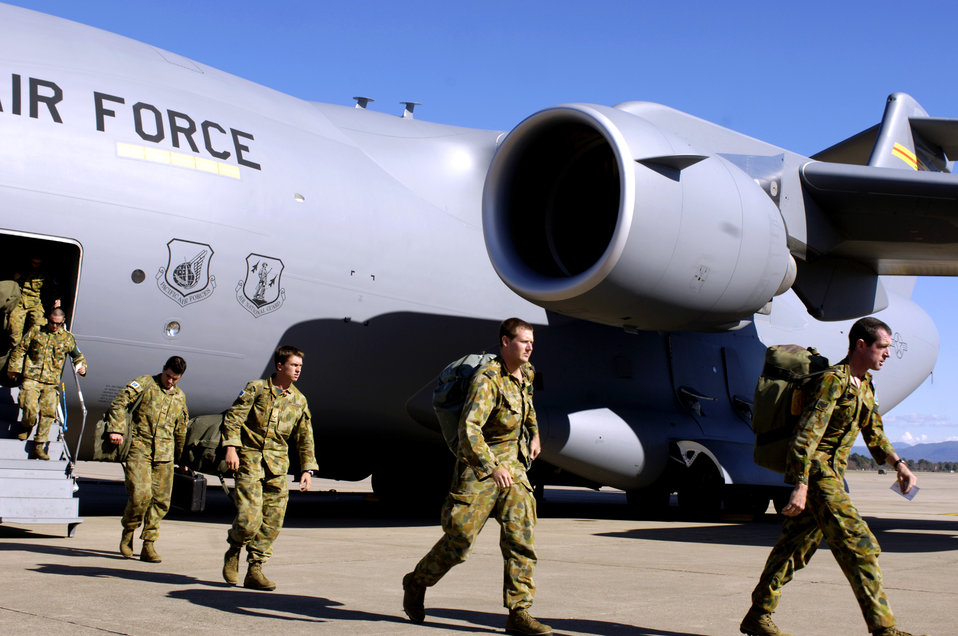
Assisting Australia

Airmen from the Australian Defense Force disembark from a C-17 Globemaster III at Royal Air Force Base Richmond, Australia, on Sunday, May 28, 2006. Two C-17 Globemaster IIIs and their crews are helping the Australian Defense Force reposition its forces to better support peace operations in East Timor.